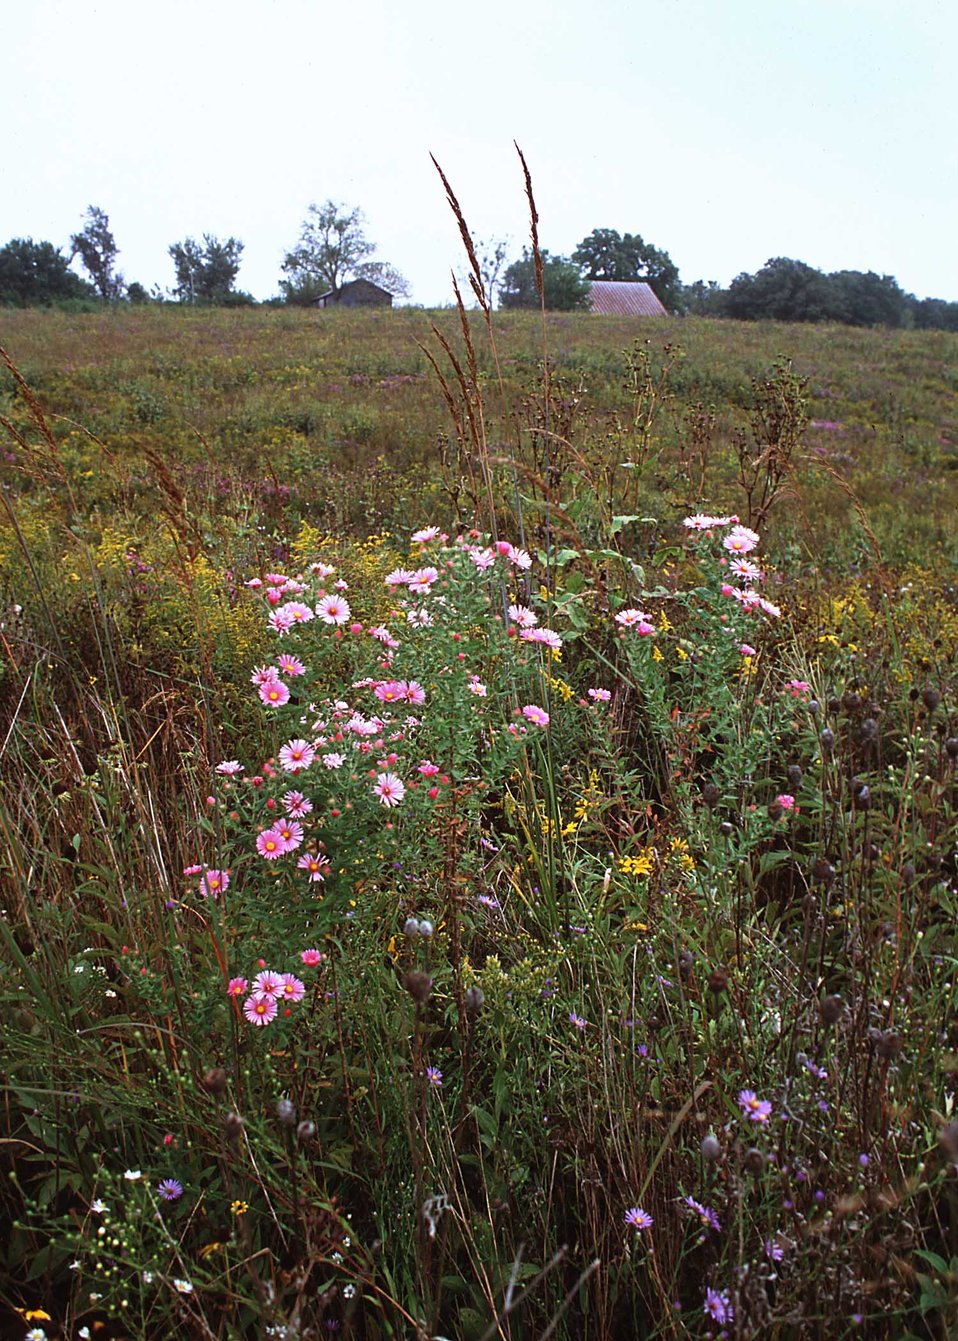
A mixture of native grasses and forbs intended to restore prairie grasses in Linn County, Iowa.